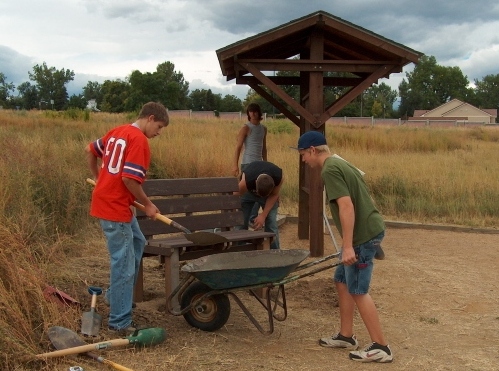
Eagle Scout - Bench